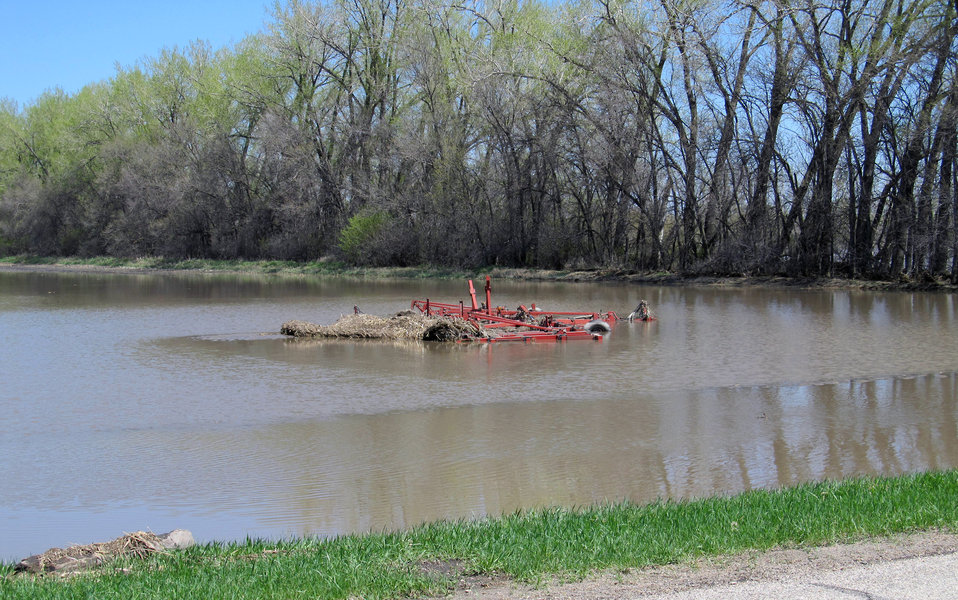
Flooding and water damage in the Park and Tongue River Watersheds located in Cavalier, Pembina and Cavalaier Counties in ND on Thursday, May 23, 2013.